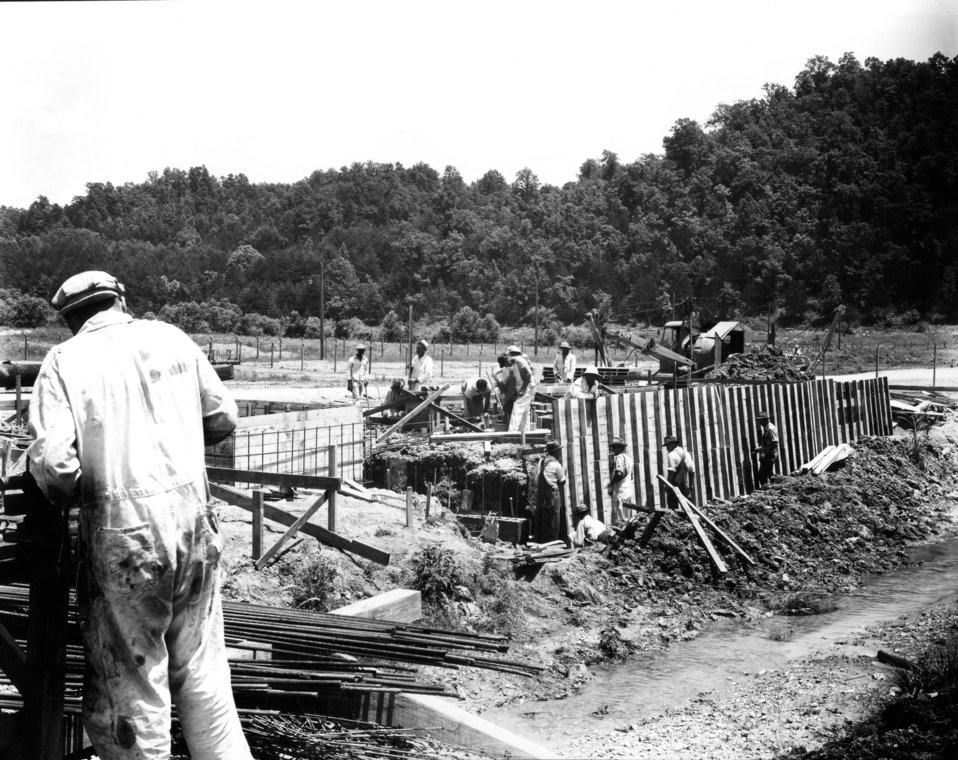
X-10 at Oak Ridge